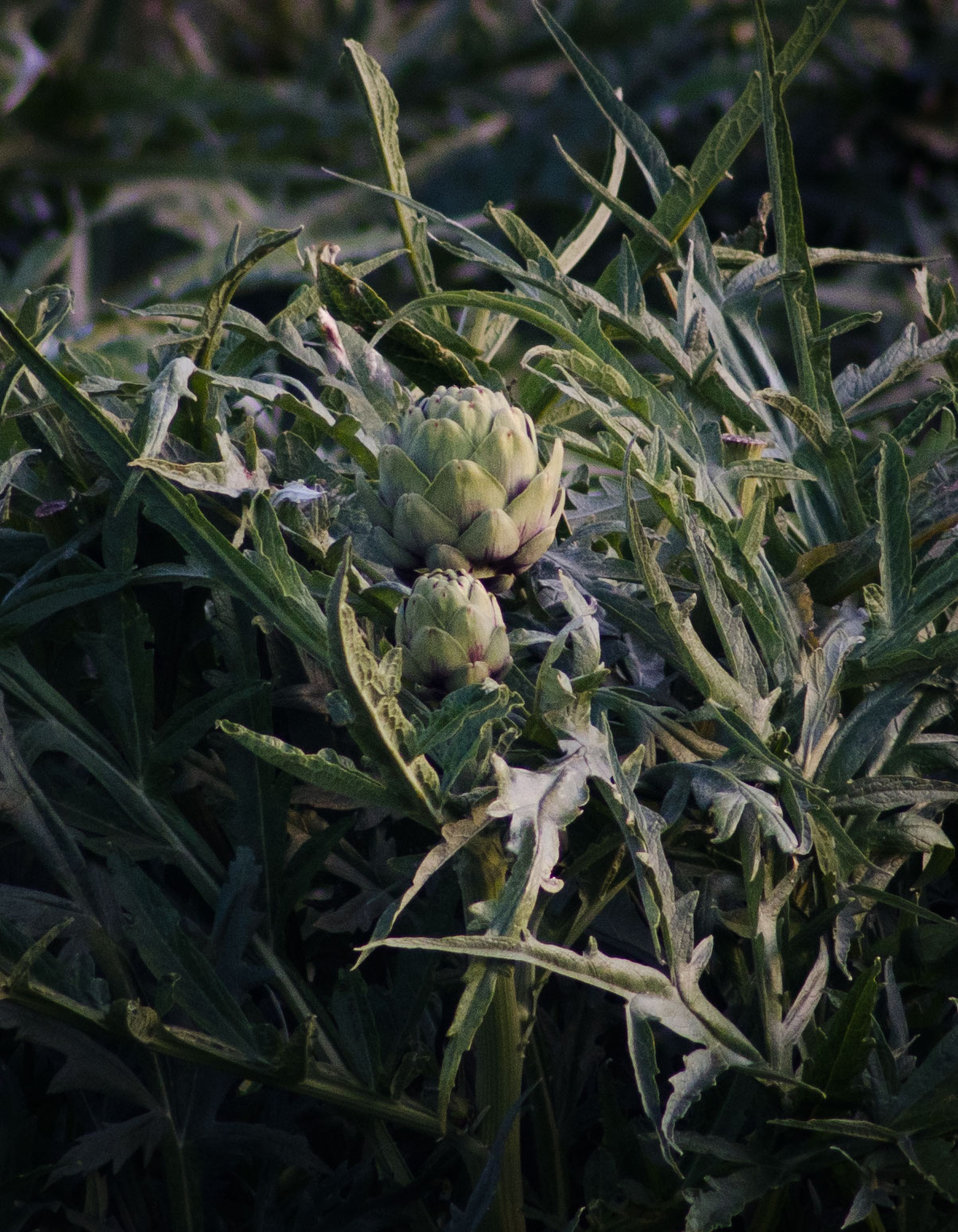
Artichoke farm in Castroville, CA, on Thursday, June 16, 2011.